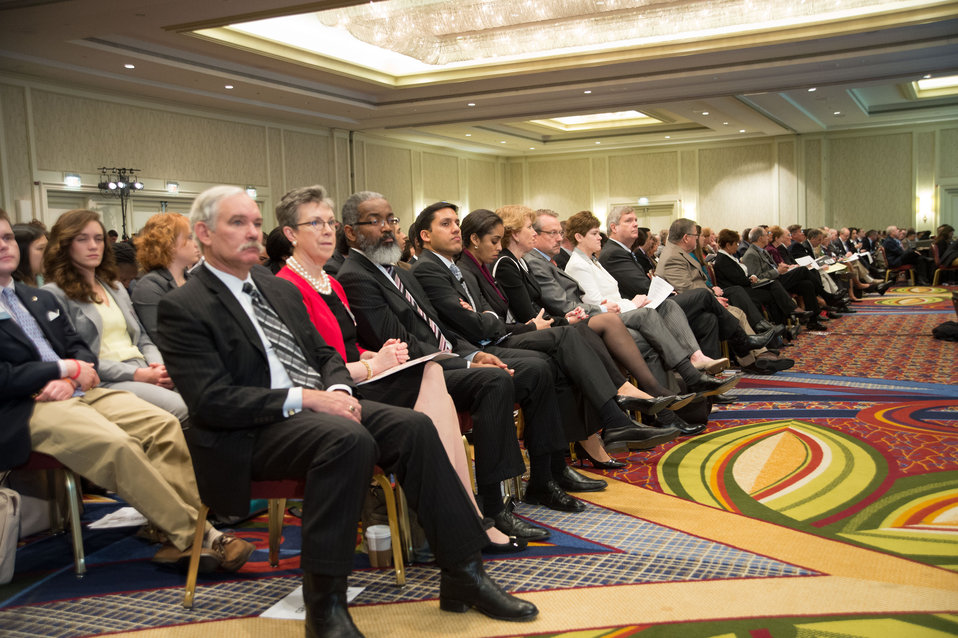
Members of the audience listen to USDA Chief Economist Joe Glauber speak about agriculture economy at the 2014 Agricultural Outlook Conference on Thursday, Feb. 20, 2014 in Arlington, VA. L to r (U.S. Department of Agriculture (USDA) Under Secretary Farm and Foreign Agricultural Service (FFAS) Michael Scuse, USDA Under Secretary Research, Education, and Economics (REE) Dr. Catherine Woteki, USDA Assistant Secretary Administration Dr. Gregory Parham, U.S. Agency for International Development (USAID) Administrator Rajiv Shah, Mercaris Founder and Chief Executive Officer Kellee James, Produce Marketing Association President Cathy Burns, DuPont Pioneer President Paul Schickler, Agriculture Deputy Secretary Krista Harden, and Agriculture Secretary Tom Vilsack). The U.S. Department of Agriculture's (USDA) annual Agricultural Outlook Forum brings together the agricultural community to discuss policy, trade, science, rural development, and the economic outlook for the coming year. The Forum also focuses on forestry, health and nutrition issues, and the changing dynamics and face of rural America.USDA photo by Bob Nichols.